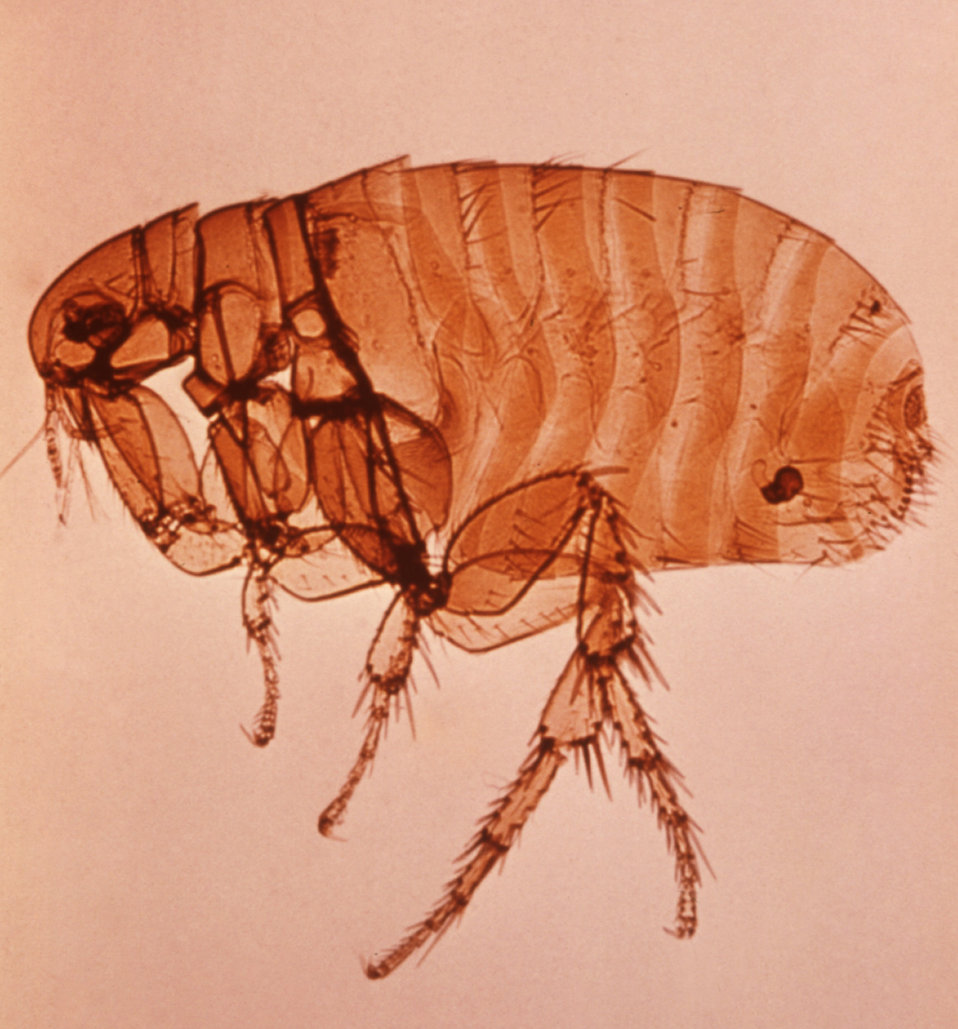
This is an enlargement of a female Xenopsylla cheopis flea, also known as the 'oriental rat flea'.